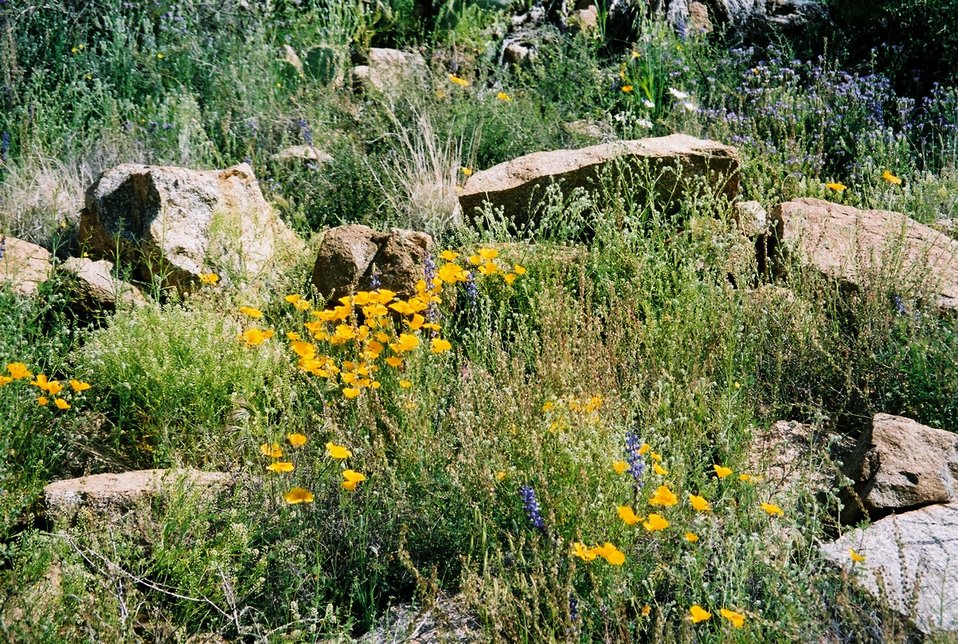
Many different kinds of beautiful wildflowers grow in the Agua Fria National Monument.